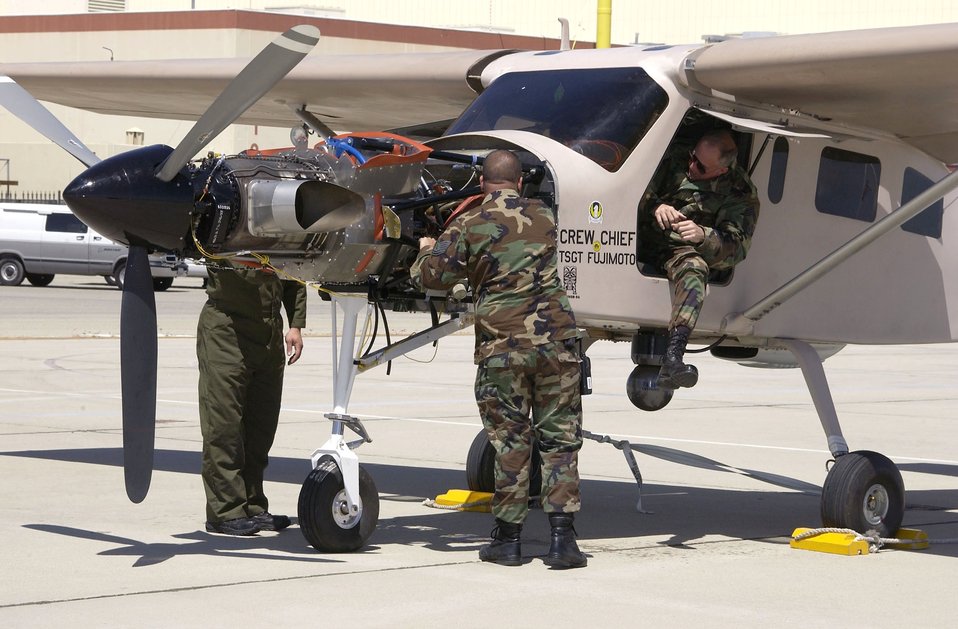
Air Force test team launches 'overhauled' Iraqi aircraft

Tech. Sgt. Rick Fujimoto makes an adjustment on the engine of an Iraqi Comp Air 7SLX at Edwards Air Force Base, Calif., on Monday, April 17, 2006. Sergeant Fujimoto is with the 653rd Combat Logistics Support Squadron at Robins Air Force Base, Ga., and one of four crew chiefs on the project.